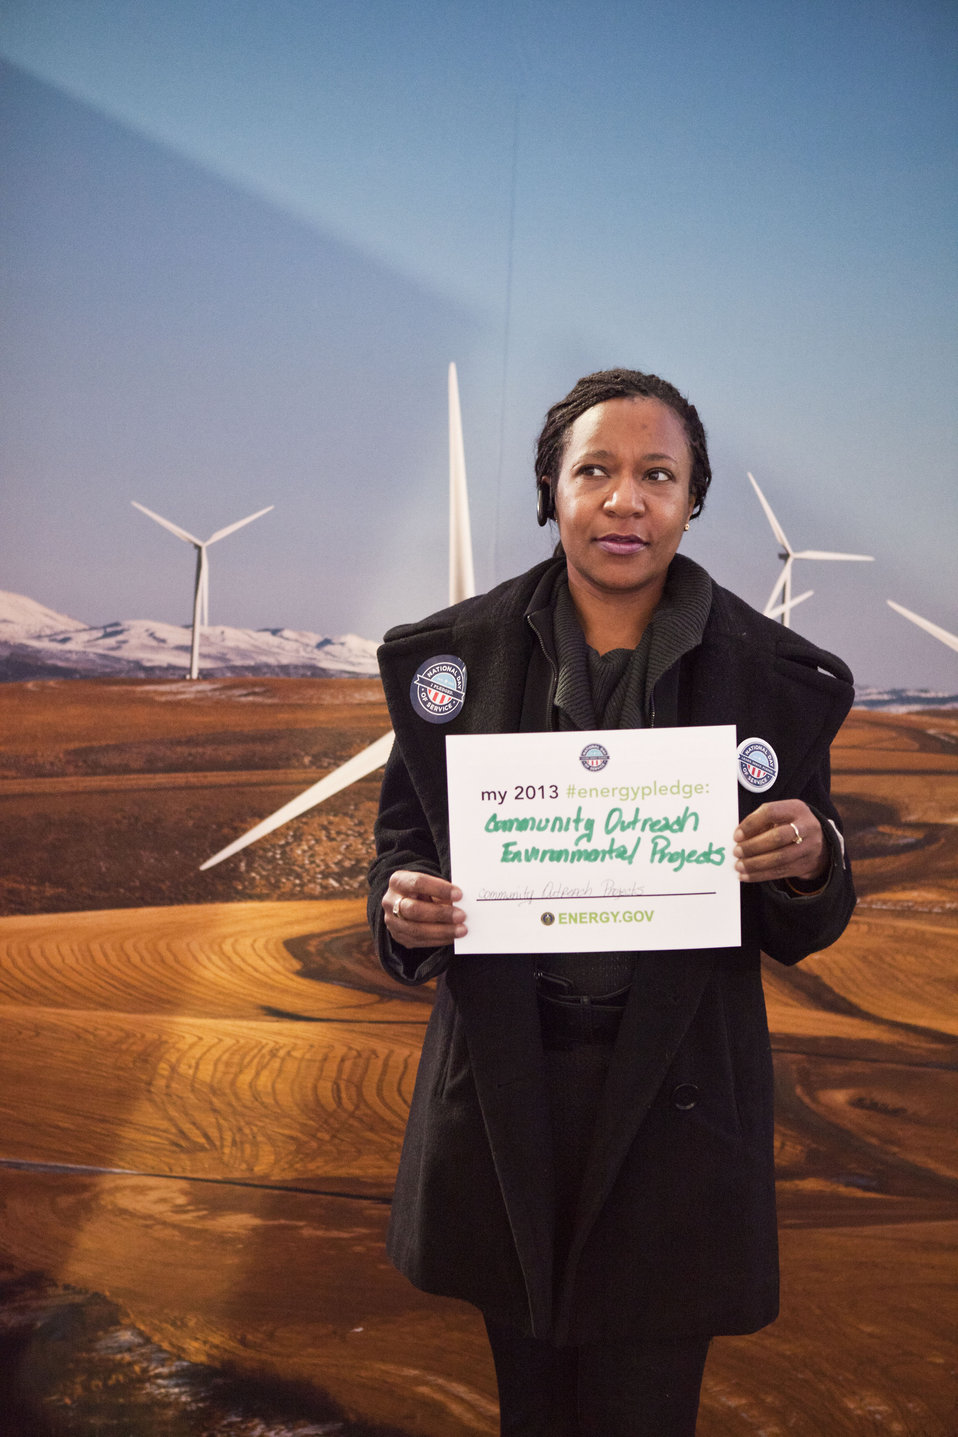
What's your #energypledge?